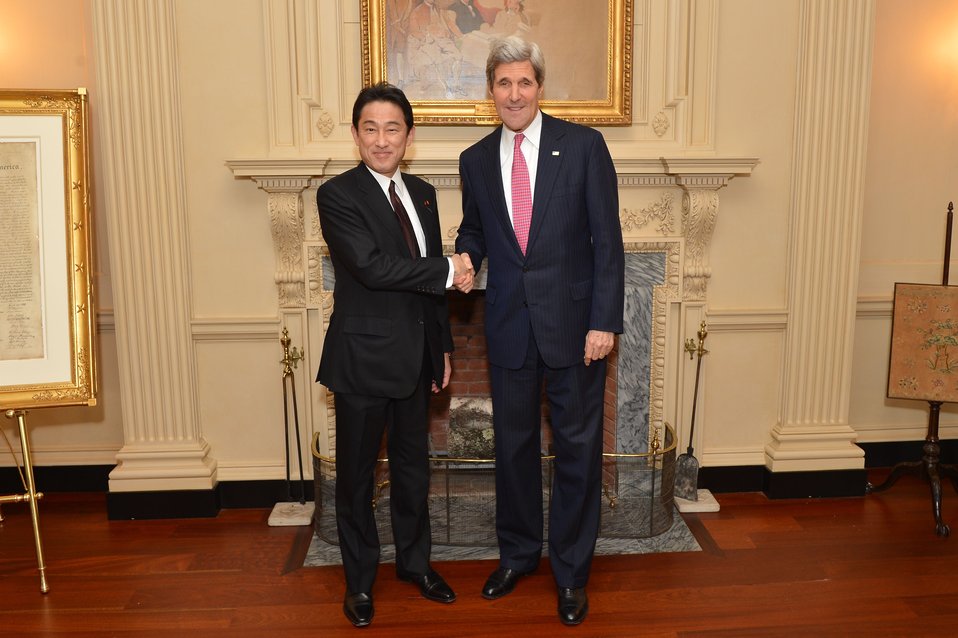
Secretary Kerry and Japanese Foreign Minister Kishida Shake Hands

U.S. Secretary of State John Kerry and Japanese Foreign Minister Fumio Kishida shake hands before their bilateral meeting at the U.S. Department of State in Washington, D.C., on February 7, 2014.